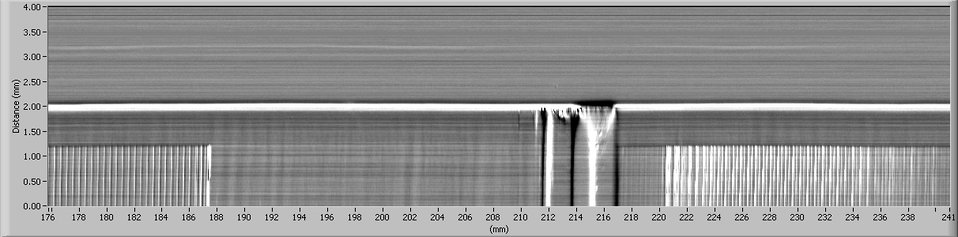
Magnetic Tape Analysis

This image, produced by the new NIST forensic tape analysis system, clearly reveals an overdubbing. The new recording is visible from the left bottom of the image to about 188 millimeters on the distance counter, the large smudge at 216 mm was made by the erase head, and the original recording is visible starting at about 220 mm.